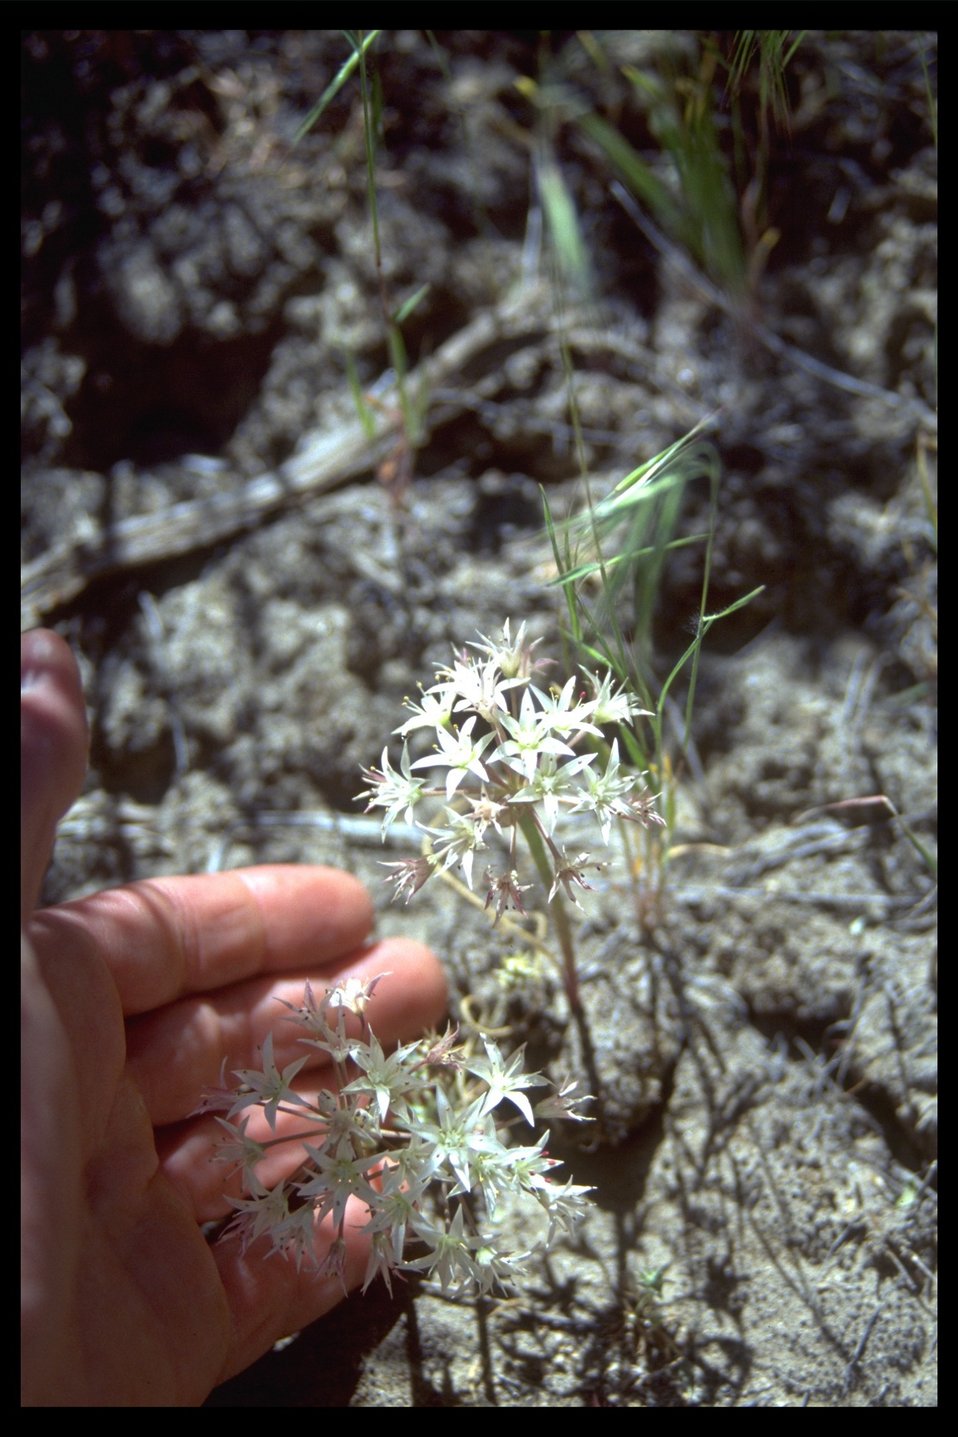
Alvord Desert WSA, wild Nevada onion on the Coyote Lake Sand Dunes. (WSA 2-74)